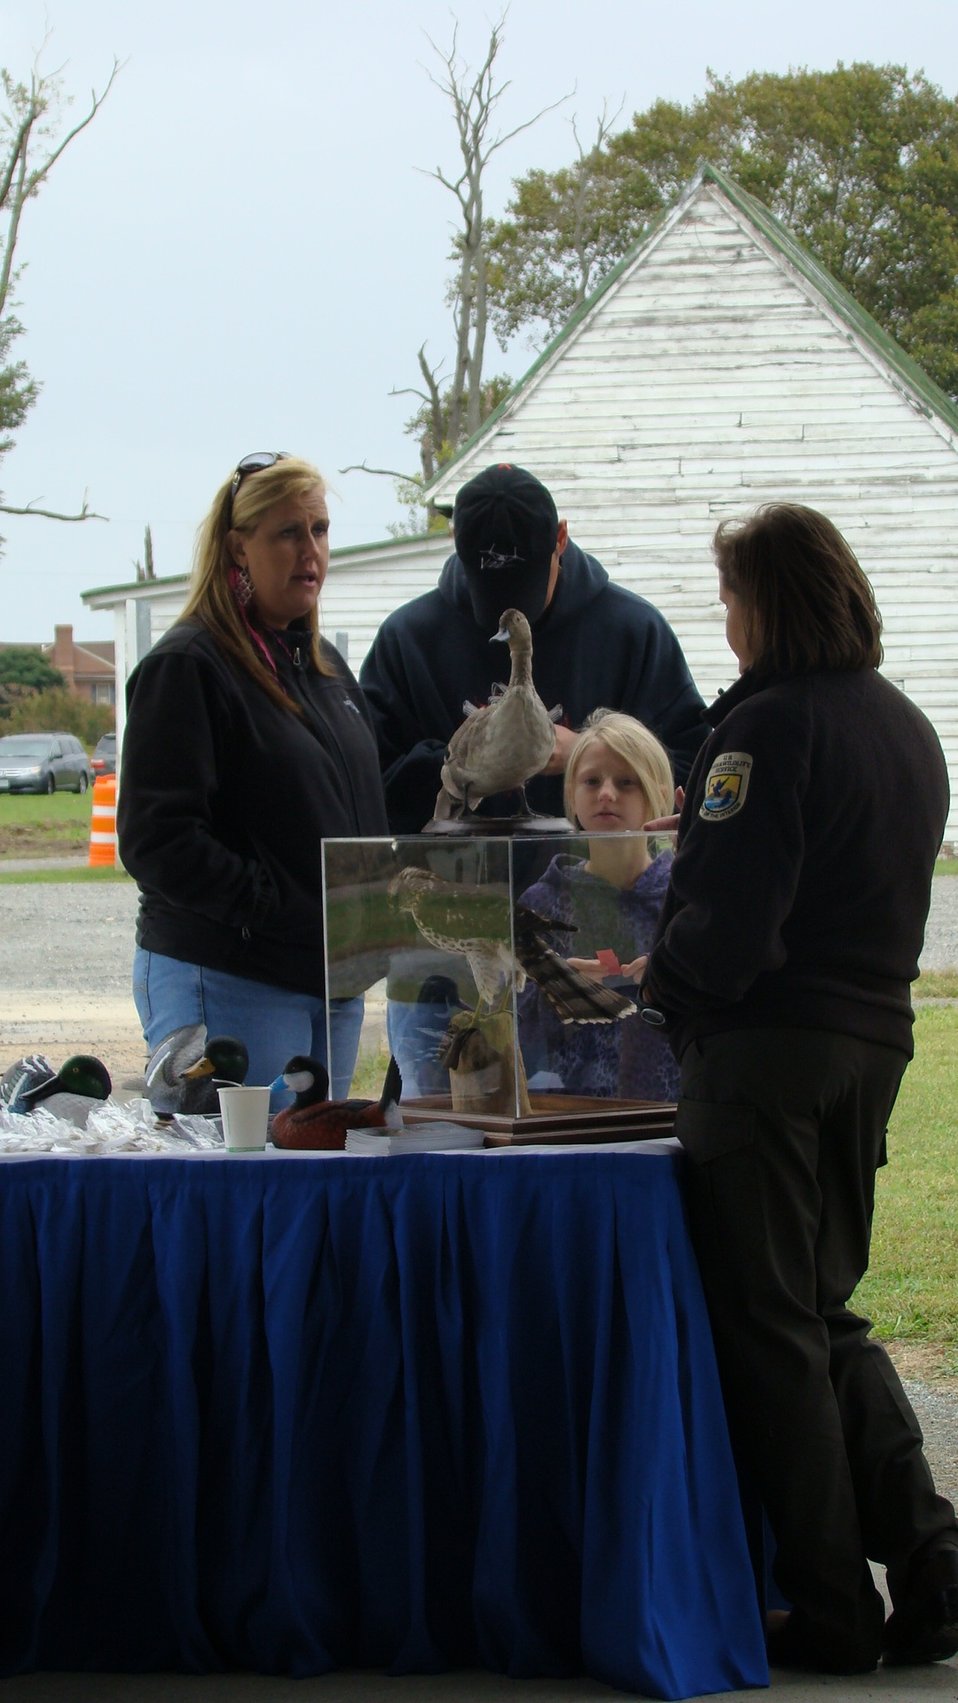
Rappahannock River Valley NWR 15th Anniversary

Refuge staff share about the Refuge at the 'Go Wild!' celebration